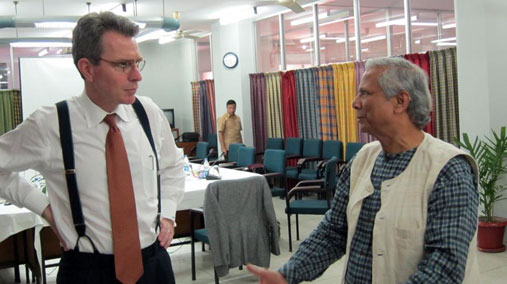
Principal Deputy Assistant Secretary Pyatt Meets With Nobel Laureate Yunus

Principal Deputy Assistant Secretary for the Bureau of South and Central Asian Affairs Geoffrey Pyatt meets with Grameen Bank Managing Director and Nobel Laureate Muhammad Yunus in Dhaka, Bangladesh, on February 12, 2011.